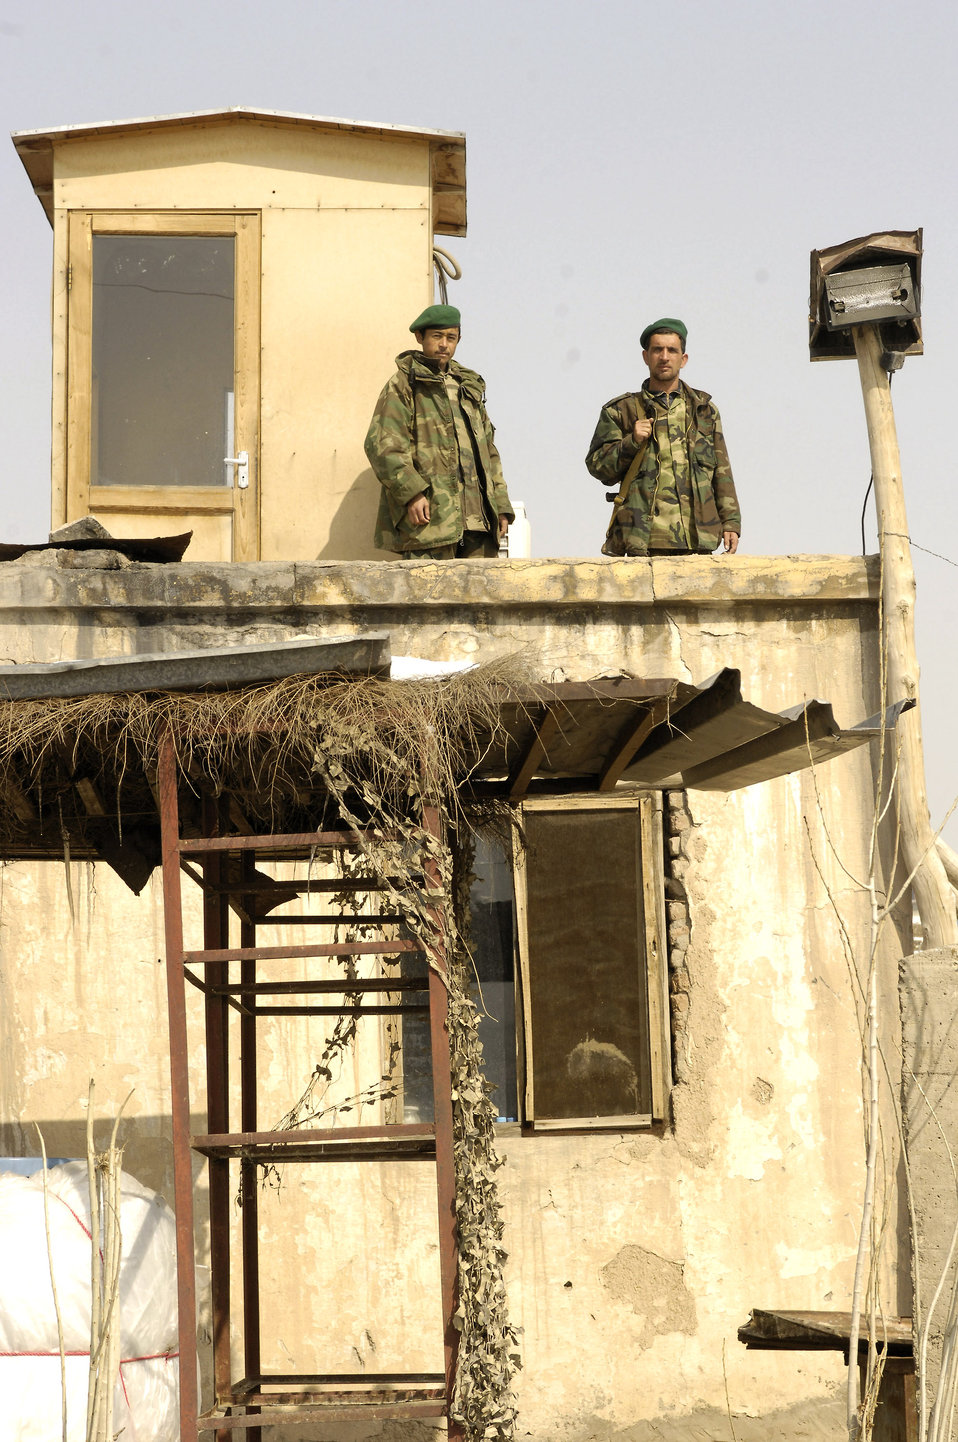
U.S., Afghan forces unite to open fuel depot

Afghanistan national army soldiers stand atop a security tower Feb. 17 at Khair-Khana, Afghanistan. The soldiers live in the building below when not on duty. Airmen from the 755th Air Expeditionary Group, Logistics Embedded Training Team, Combined Security Transition Command-Afghanistan, assisted the ANA in transitioning from the outdated facility to a state-of-the-art class III fuel depot.